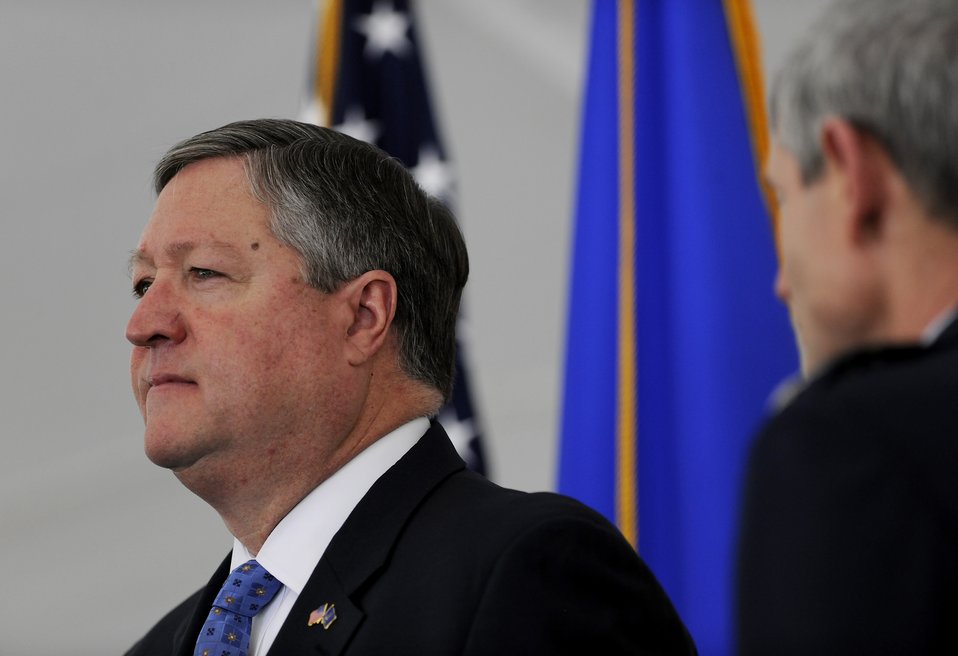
Fisher House Groundbreaking at Dover

Secretary of the Air Force Michael B. Donley and Air Force Chief of Staff Gen. Norton Schwartz stand in ceremony May 1 while the national anthem plays during a groundbreaking ceremony for the future Fisher House at Dover Air Force Base, Del. The Secretary co-hosted the ceremony with General Schwartz and Kenneth Fisher, the Fisher House Foundation chairman of the board of trustees . This Fisher House is unique in that it will provide hospice services to family members awaiting the return of their fallen servicemembers from overseas.